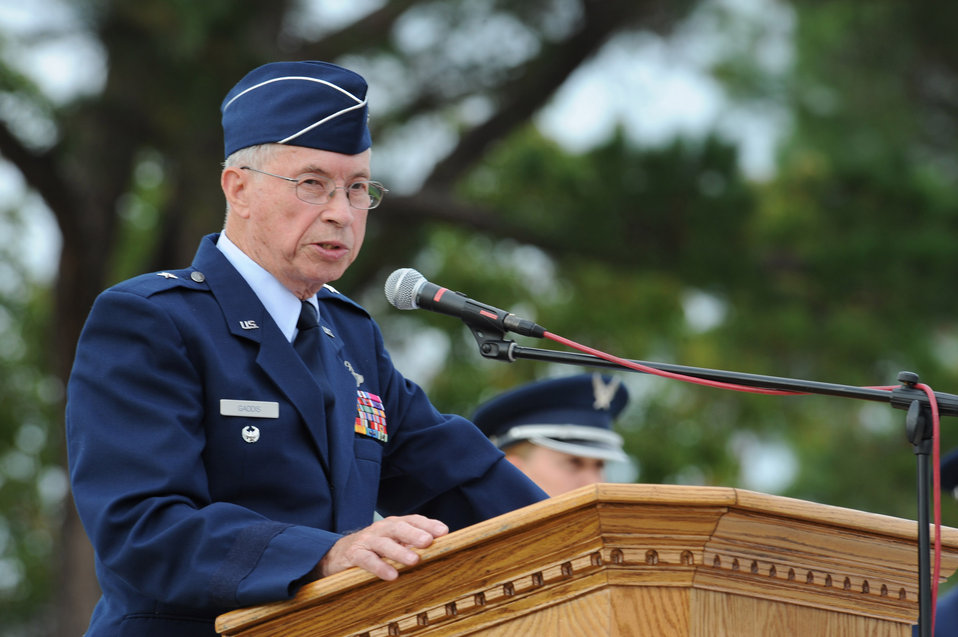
Air Combat Command honors POW/MIA Remembrance Day

Retired Brig. Gen. Norman Gaddis shares with the crowd his experiences as a prisoner of war during the Prisoners of War/Missing in Action remembrance ceremony Sept. 18, 2009, at Seymour Johnson Air Force Base, N.C. National POW/MIA Recognition Day is one of six days specified by federal law that the POW/MIA flag will be flown over federal facilities, cemeteries, post offices and military installations. The flag is also flown on Armed Forces Day, Memorial Day, Independence Day, Veterans Day and Flag Day.